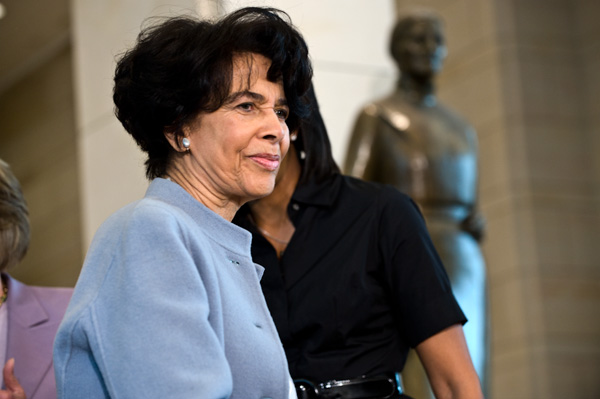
Artis Lane (1927- ) - Women Artists

Artist of the bronze bust of Sojourner Truth on display in Emancipation Hall in the Capitol Visitor Center.